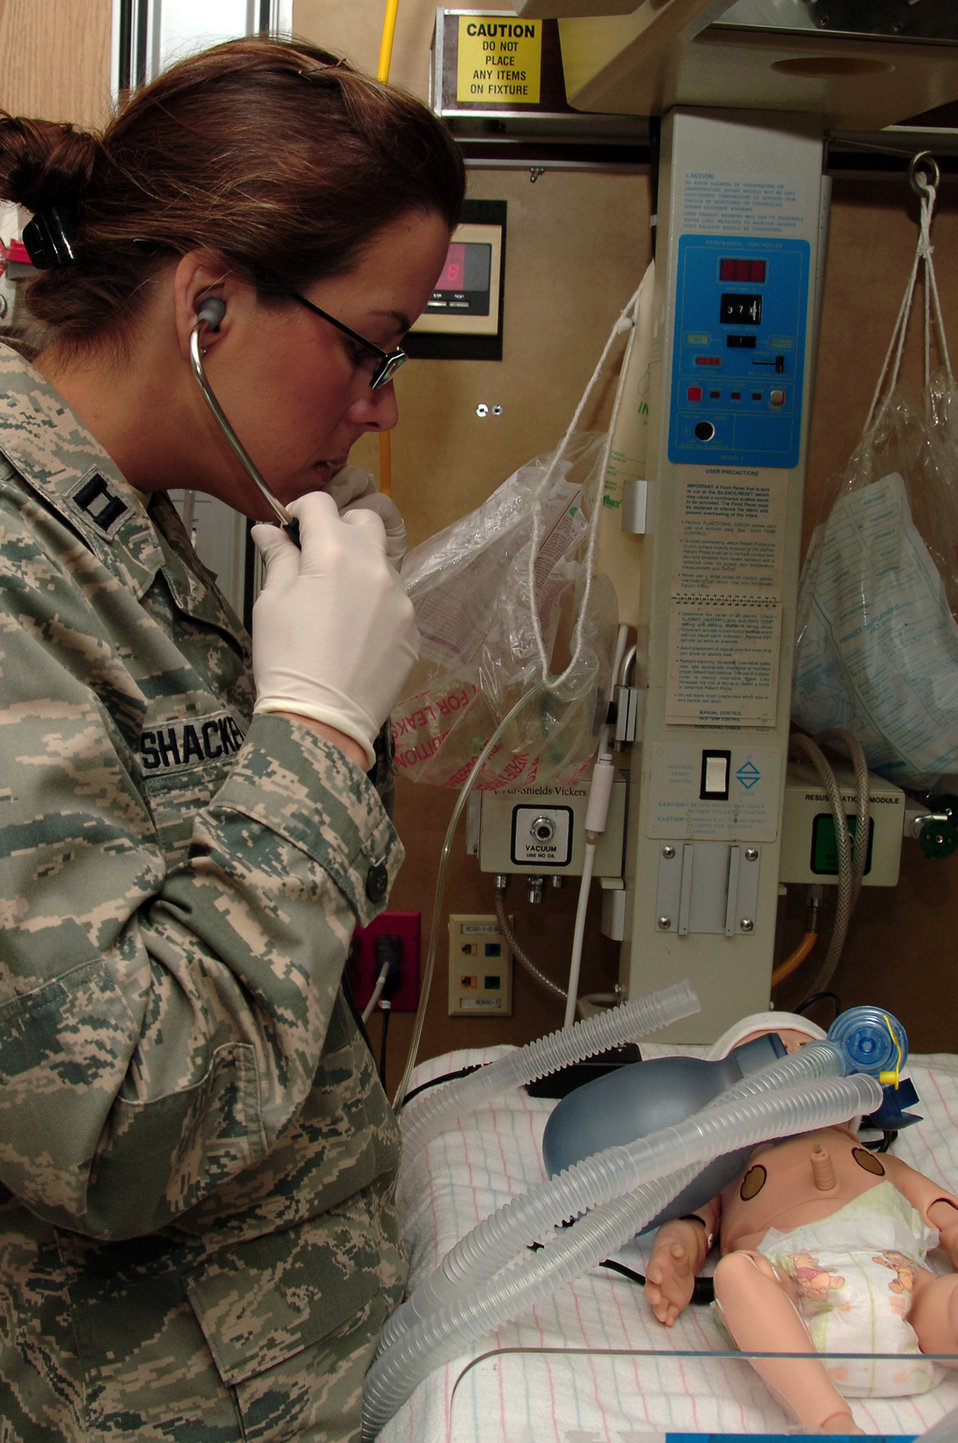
EM residents use simulation mannequins for grand rounds

Capt. (Dr.) Brenna Shackelford checks the vital signs of a newborn as part of a scenario during simulation grand rounds May 21, 2010, in the Wilford Hall Medical Center simulation center at Lackland Air Force Base, Texas. The simulation grand rounds is held every few months and used to augment and improve resident education. Doctor Shackelford is an emergency medicine resident with the 59th Emergency Medicine Squadron.